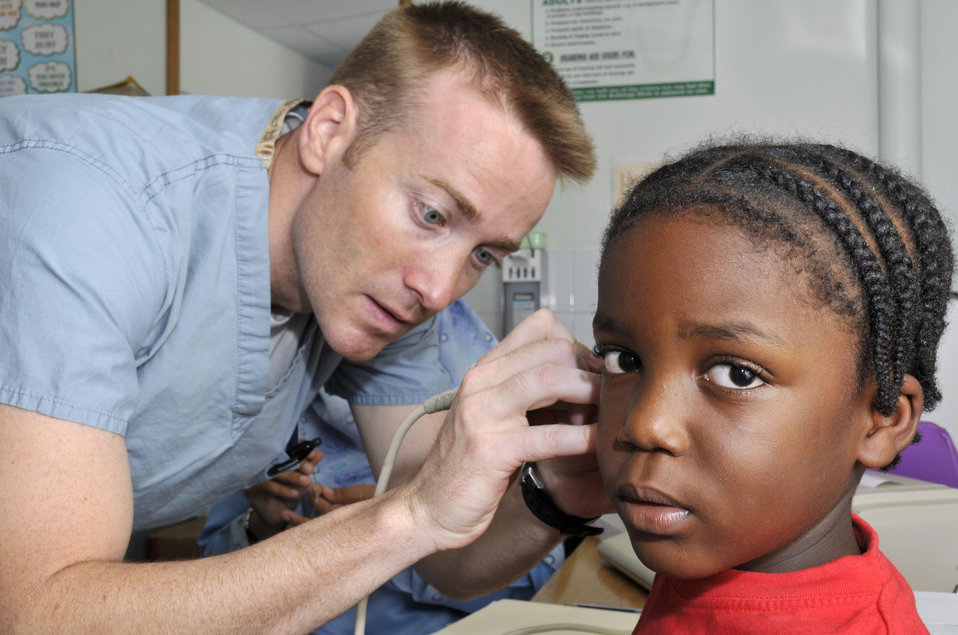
New Horizons Guyana 2009 comes to a close

Capt. Johnny Foster uses a tympanometer to measure a Guyanese boy's eardrums Aug. 11, 2009, at the Georgetown Public Hospital in Georgetown, Guyana. Ear, nose and throat doctors deployed here will see more than 500 patients in eight days. Captain Foster is an audiologist from the 59th Medical Wing at Wilford Hall at Lackland Air Force Base, Texas.